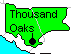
Map of California's 37th State Assembly district